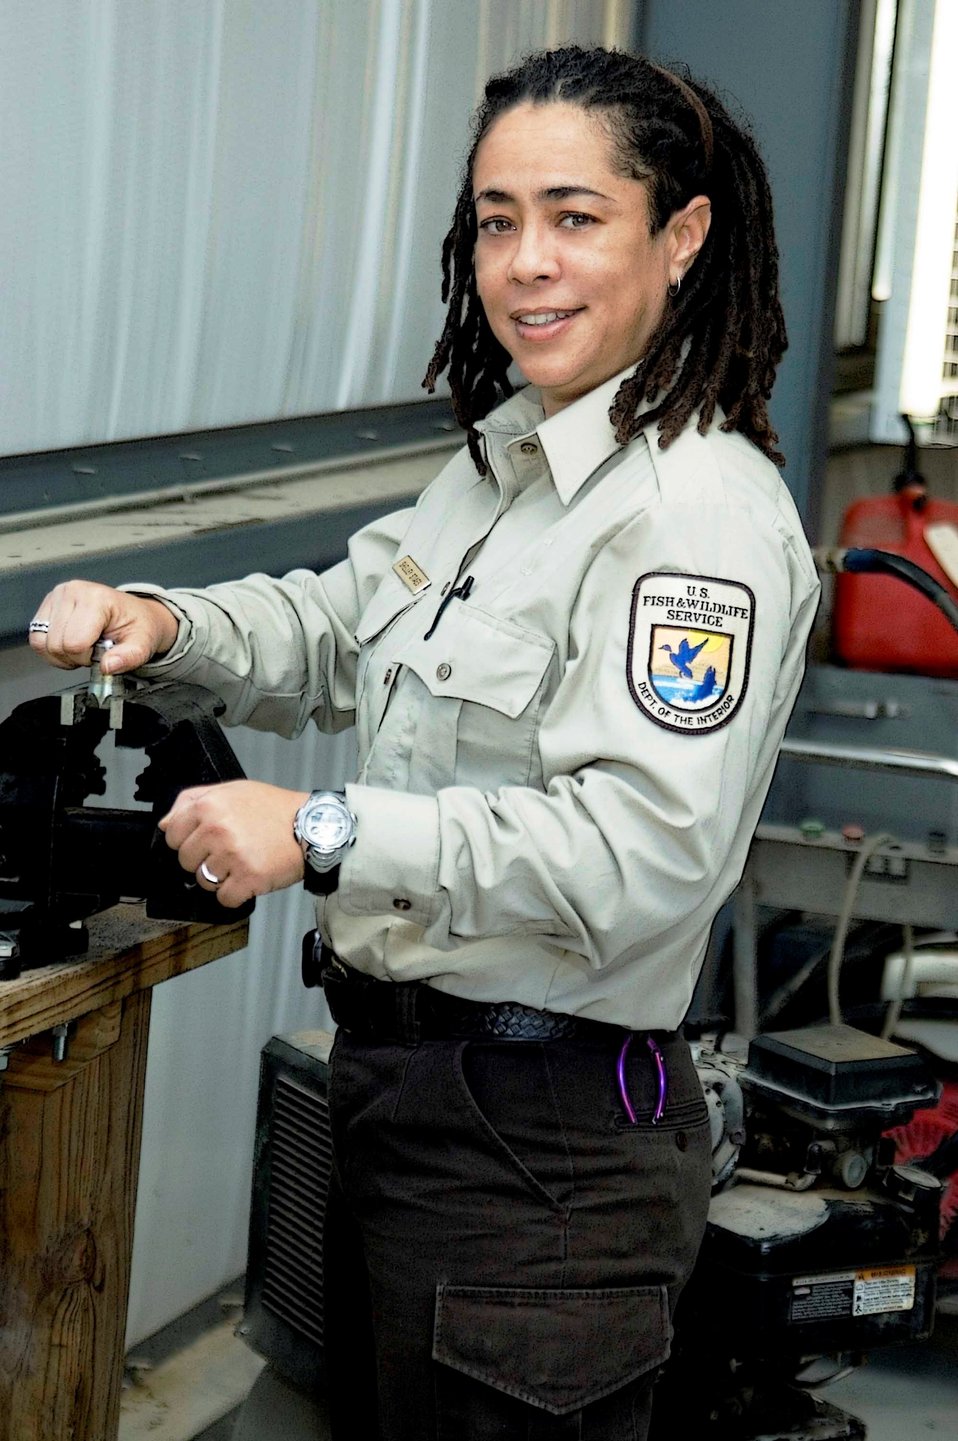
Shelley Stiaes, jack of all trades

Shelley Stiaes, at work in the maintenance shop of the Southeast Louisiana Refuge Complex headquarters in Lacombe, Louisiana.